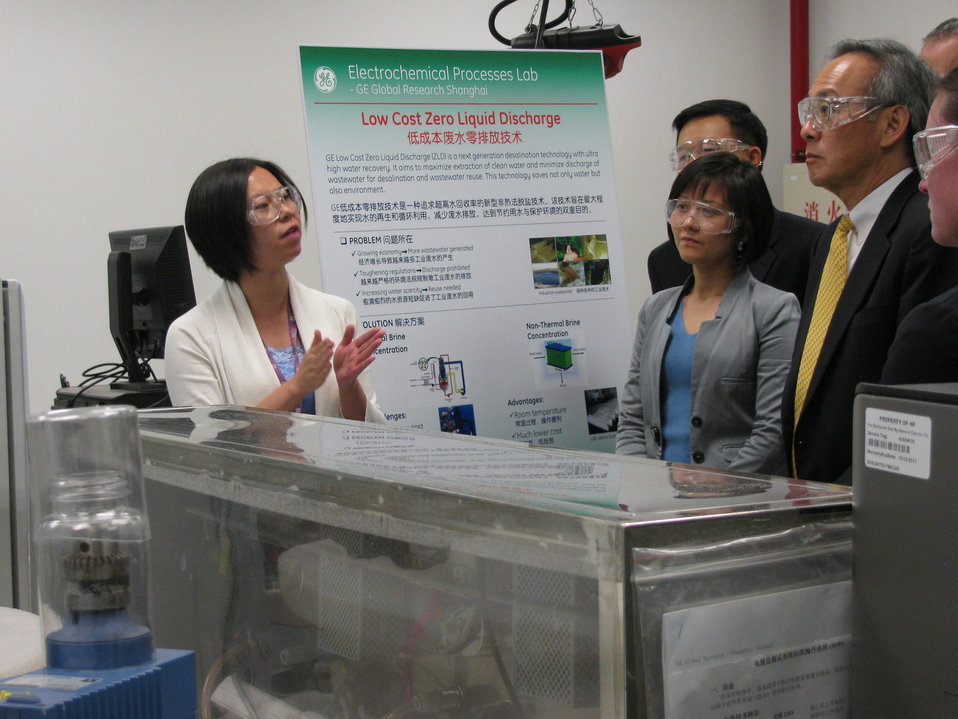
Shanghai 061